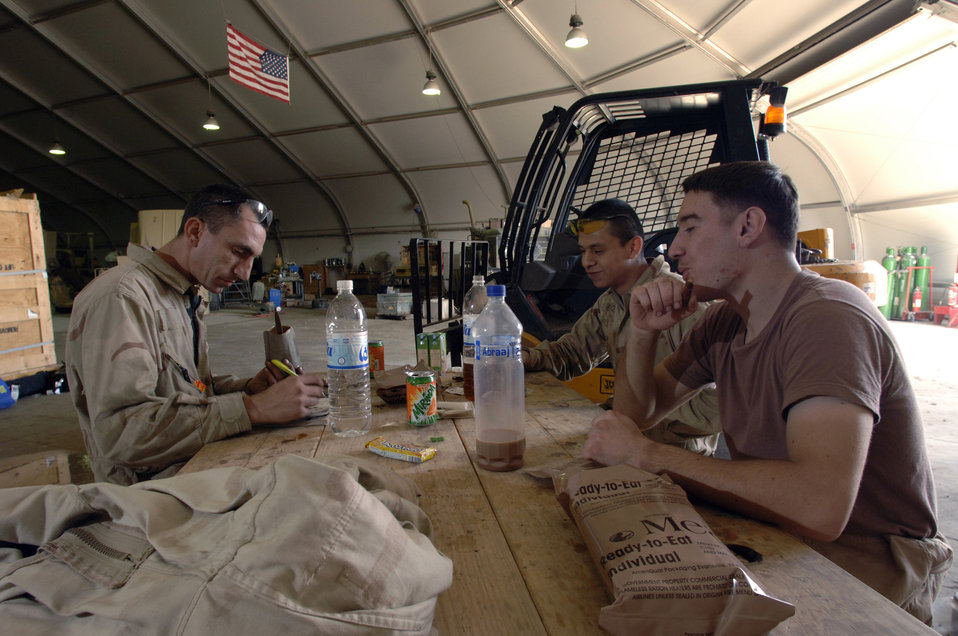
Operation Iraqi Freedom

BALAD AIR BASE, Iraq (AFPN) - (From left) Senior Airman Marc Webber and Airmen 1st Class Juan Lopez and Jose Maneiro take a lunch break after a morning of fast-paced work installing up-armor kits. They are assigned to the 732nd Expeditionary Logistics Squadron here. The unit comprises active duty and Reserve component vehicle maintainers who support the Army Field Support Battalion-Iraq. The add-on armor shop will shut down operations this month. To date the shop's Airmen have up-armored more than 1,300 vehicles.